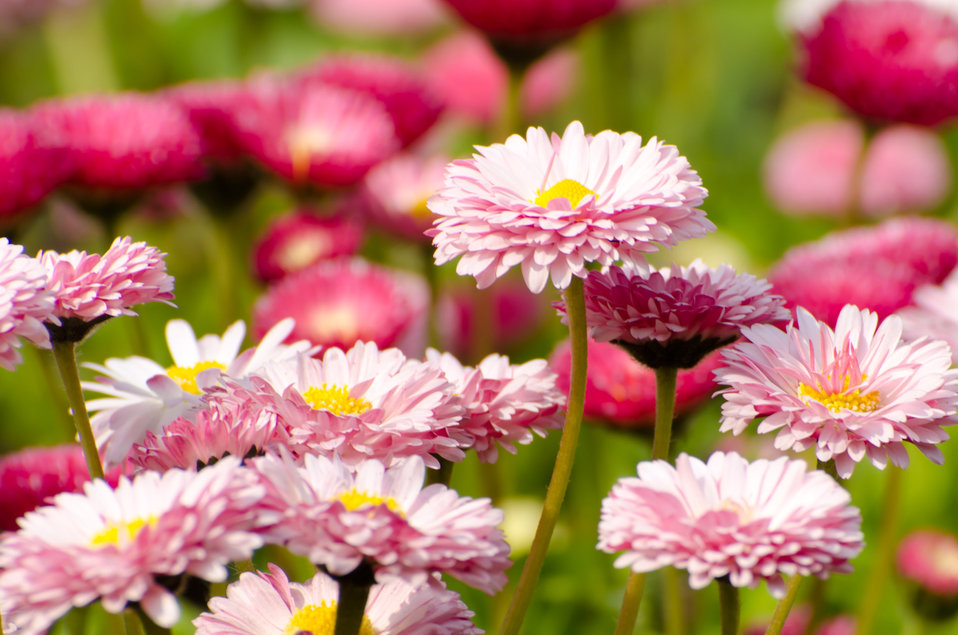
Flowers - background.